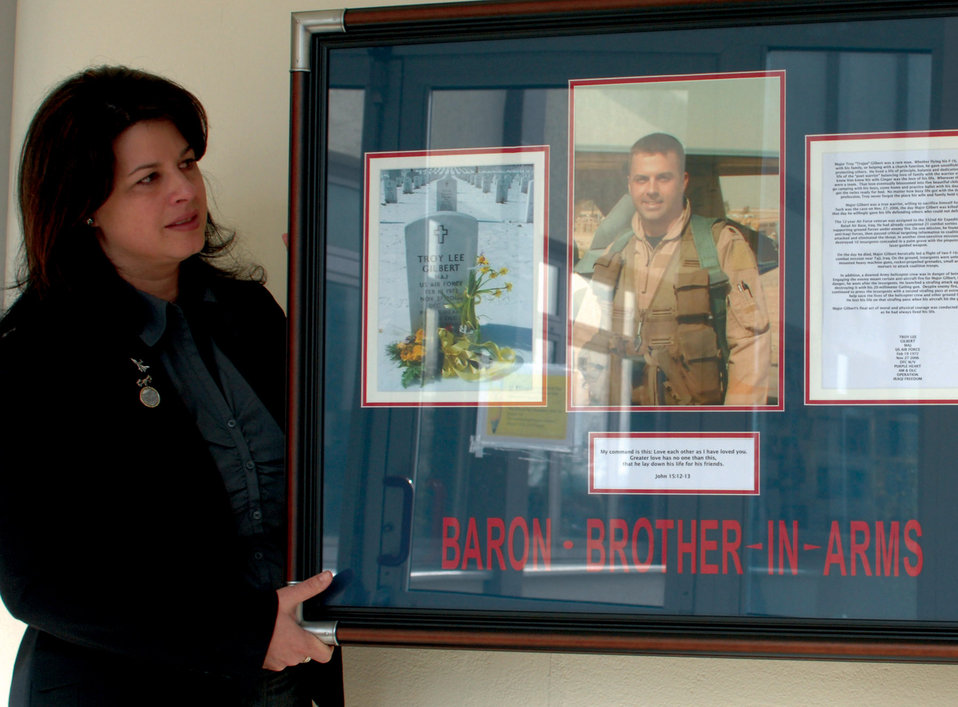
School honors fallen Airman, former student

Lenora Woodcock helps hang a commemorative plaque hung in the memory of Maj. Troy Gilbert April 5 at Bitburg High School near Spangdhalem Air Base, Germany. Major Gilbert was supporting Operation Iraqi Freedom when he lost his life when his F-16 Fighting Falcon crashed 20 miles northwest of Baghdad. Mrs. Woodcock was the event coordinator and the spouse of Col. William Woodcock, the former 23rd Fighter Squadron commander.